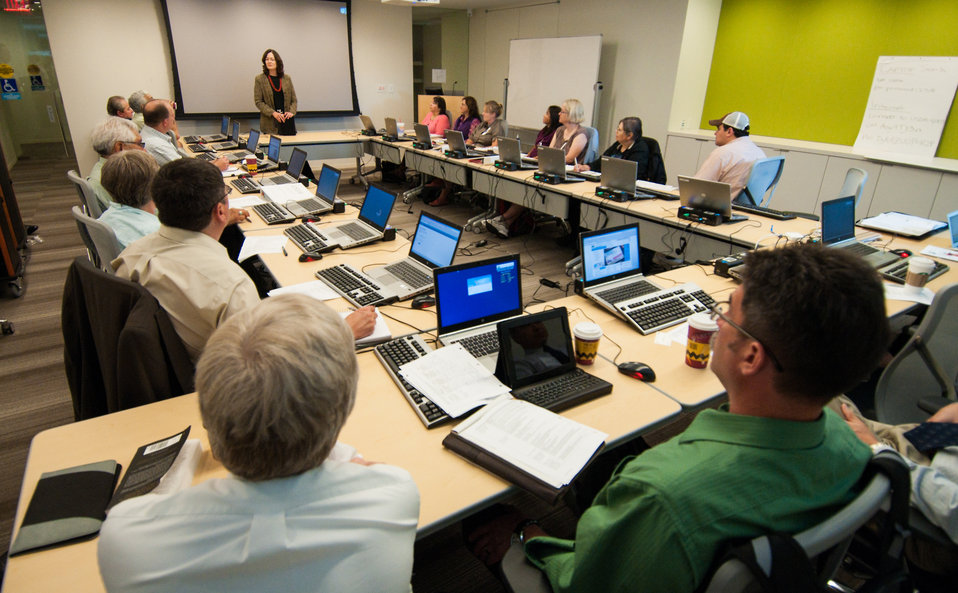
U.S. Department of Agriculture (USDA) Director of Tribal Relations and Senior Advisor to the Secretary Leslie Wheelock discusses government to government relations with the Nation’s American Indian and Alaska Native Sovereign Nations and USDA’s dedication to working on behalf of the American Indian Community at the USDA 2013 Land-Grant Development Tribal Fellows Program held in Washington, D.C. on Monday, Jun.03, 2013.